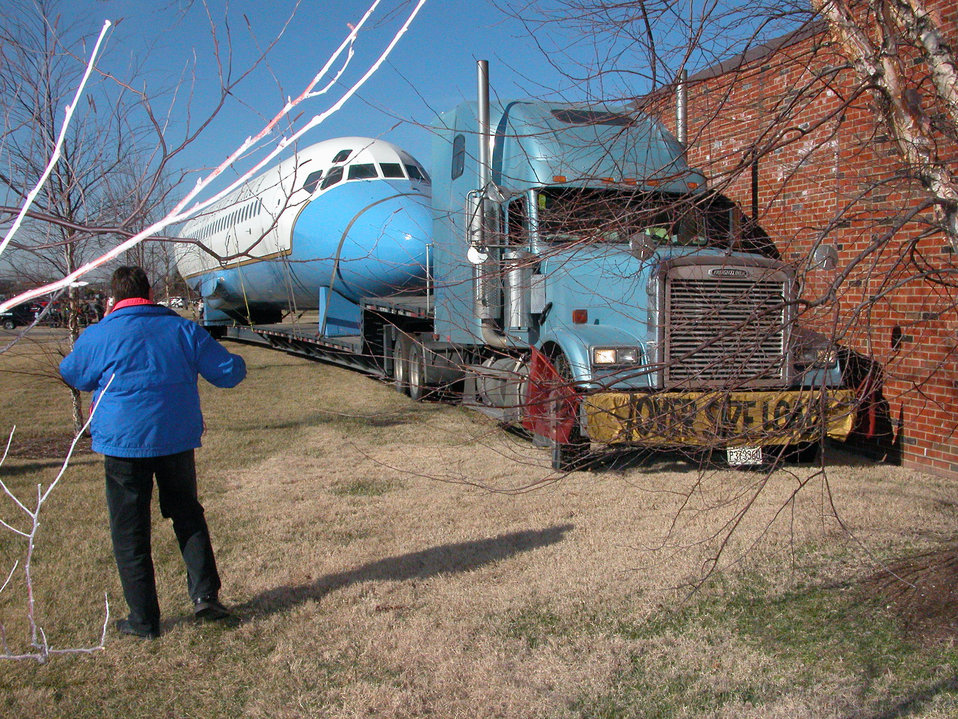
Air Force gets new lab for testing airborne networking

SCOTT AIR FORCE BASE, Ill. -- A tractor-trailer carried a DC-9 fuselage here from across the southwestern United States. The fuselage was then lifted into an Air Force Communications Agency compound.